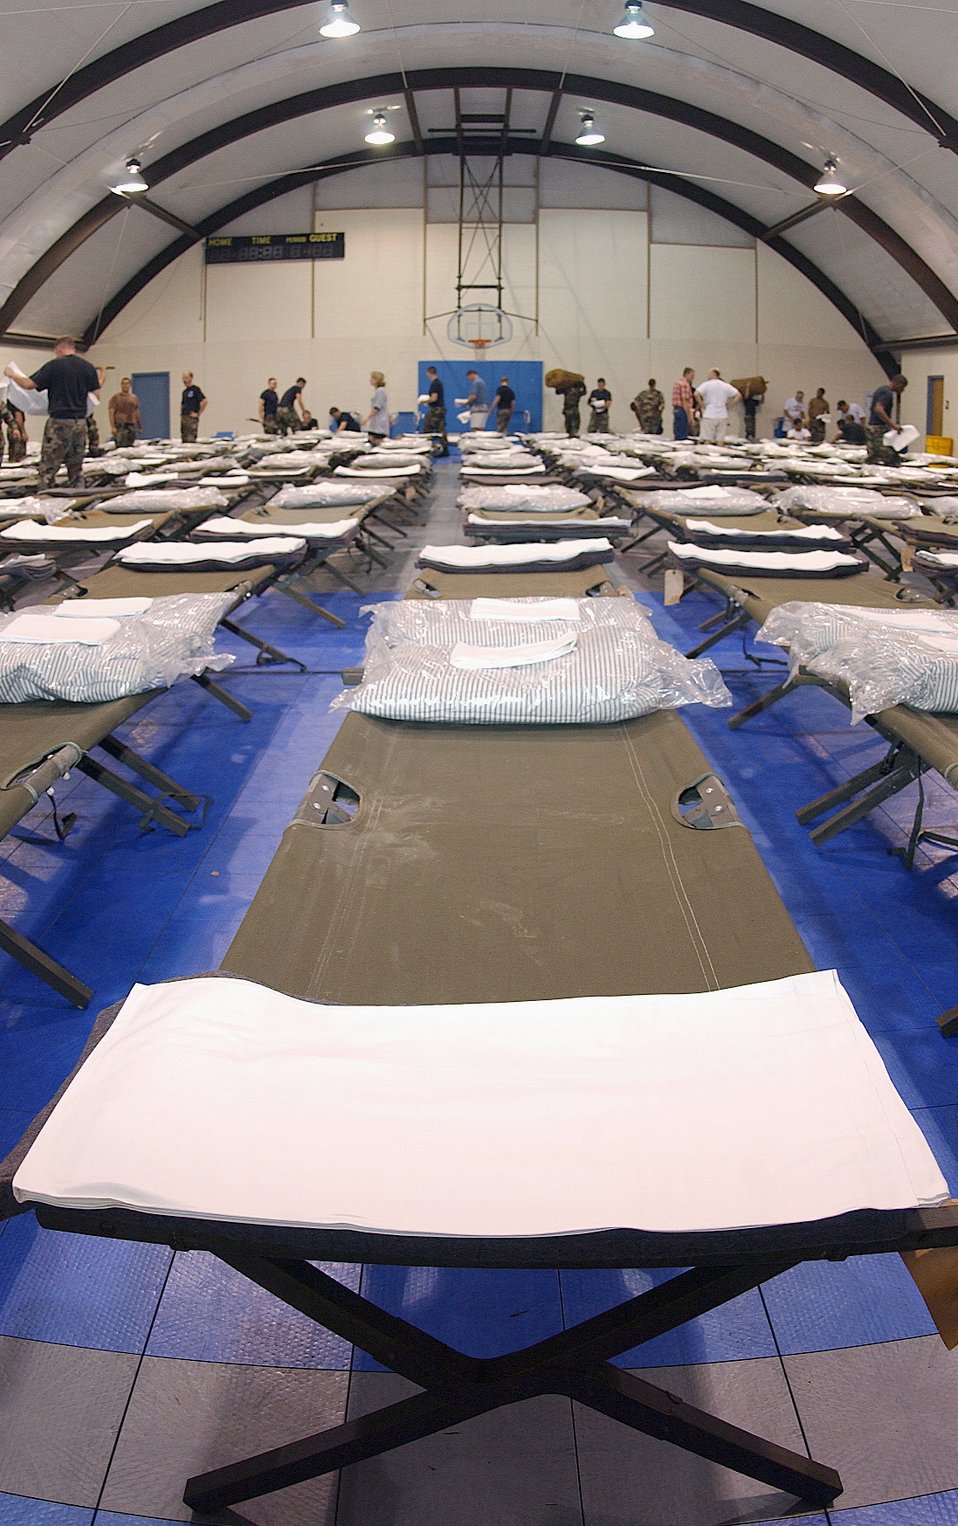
Helping in Abilene

ABILENE, Texas -- About 100 Airmen from Dyess Air Force Base, Texas, volunteered at three shelters here to set up cots for more than 450 evacuees seeking refuge from Hurricane Rita.